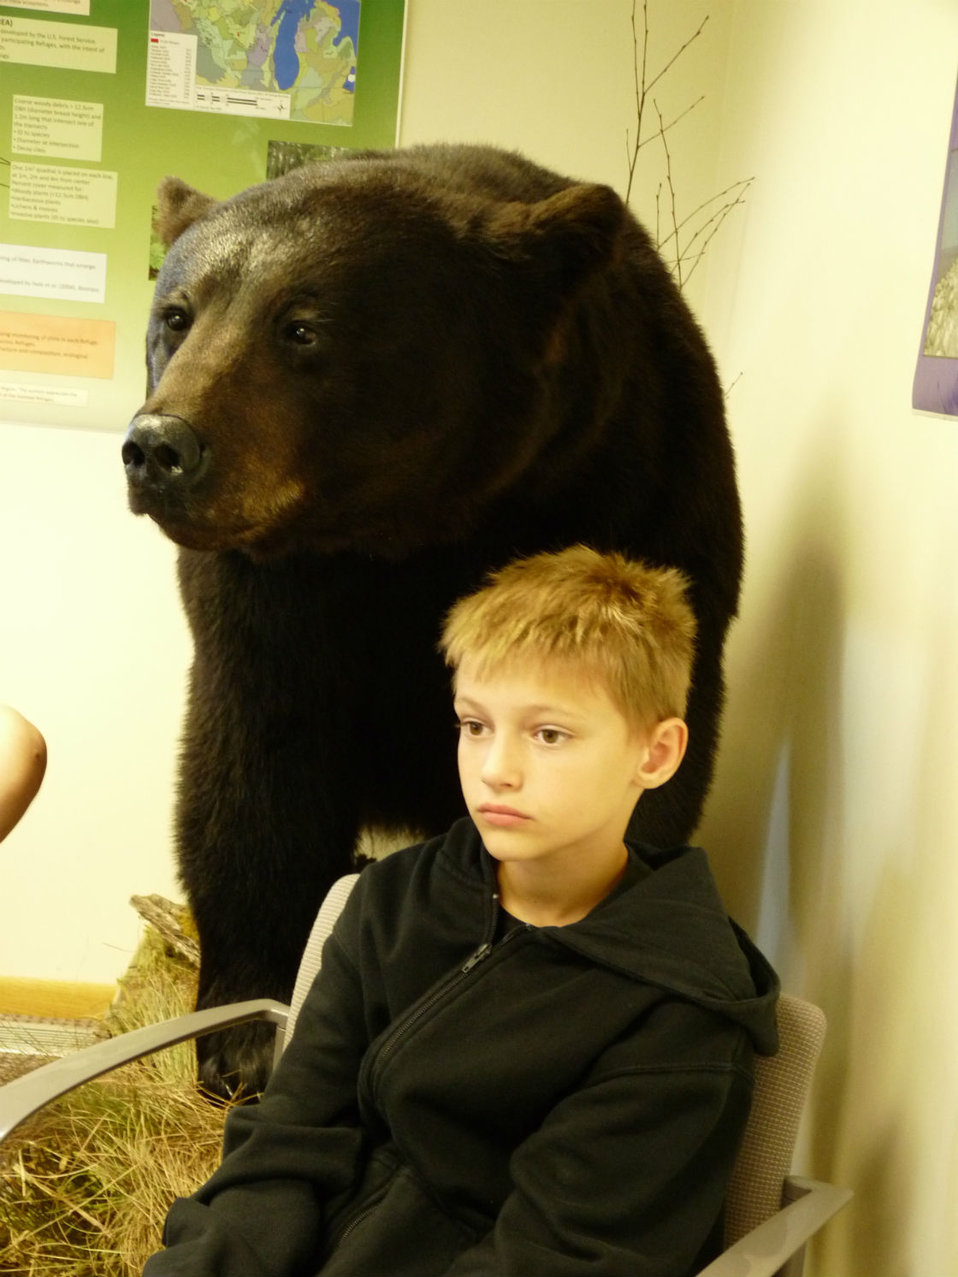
Grant Grams with Black Bear

Grant Grams got up close and personal with Rice Lake NWR's resident black bear, Cubby.